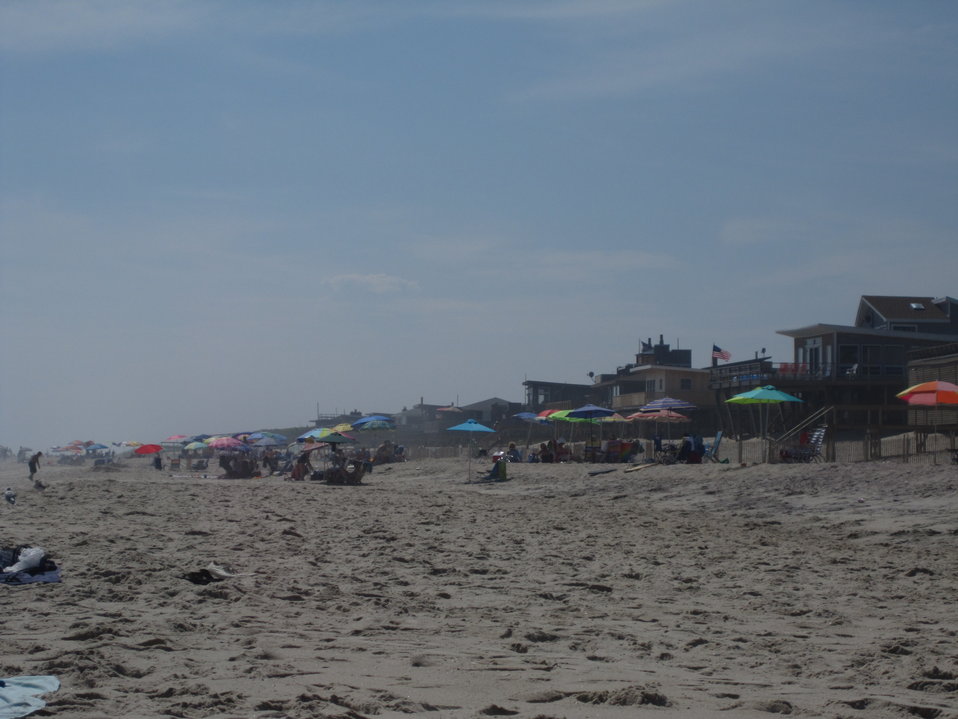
Colorful Umbrellas at Davis Park NY Aug/20/2009 Photo by ... Stevan